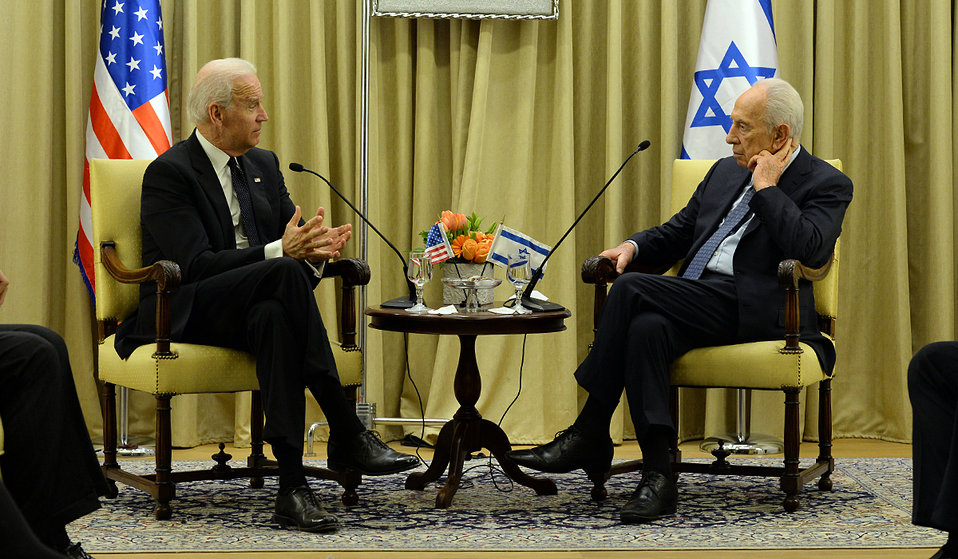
Vice President Biden Meets With Israeli President Peres

Vice President Joe Biden meets with Israeli President Shimon Peres in Jerusalem on January 13, 2013.